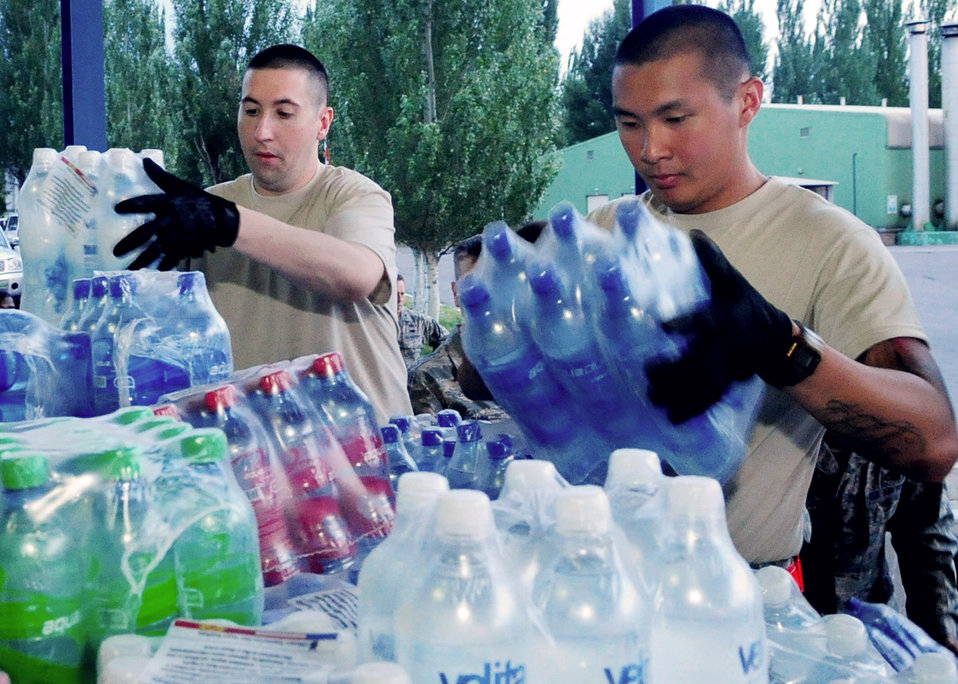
Airmen purchase, deliver food for Osh

Airmen from the Transit Center at Manas load food onto a pallet at the Manas International Airport in Kyrgyzstan June 13, 2010, for transportation to Osh, Kyrgyzstan. Transit Center and Department of State officials purchased flour, oil, pasta, tea, yeast, and other basics totaling more than 31,000 pounds for a humanitarian assistance delivery to the southern region of Osh.